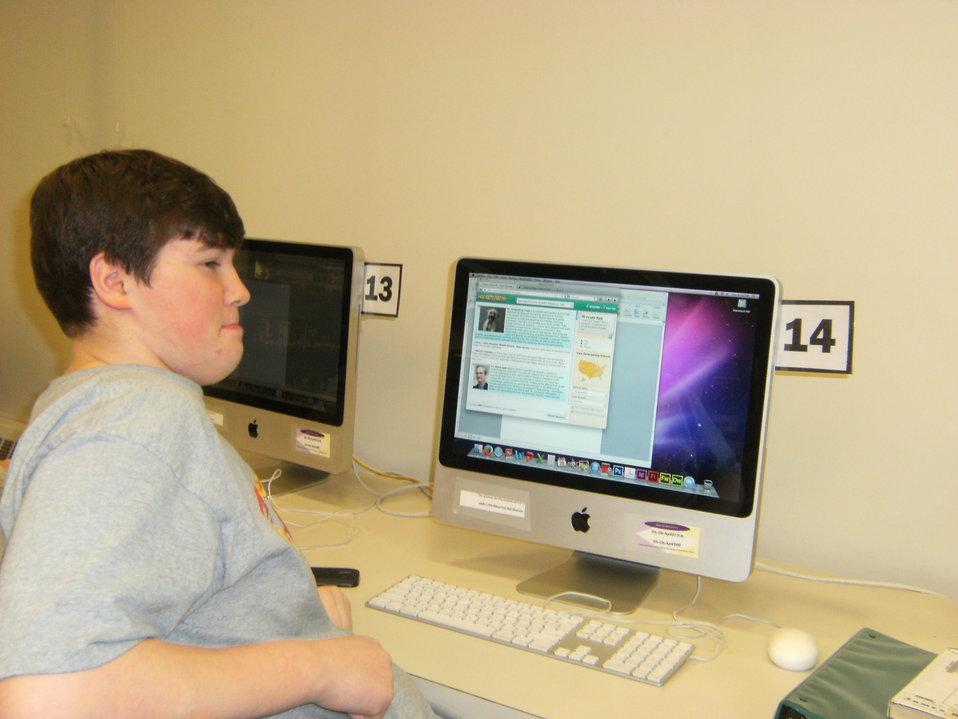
Lathrop High School SADD

Students Against Destructive Decisions (SADD)
presented an assembly with guest speaker Amy Bollaert, Coordinator of the Fairbanks Prevention Coalition, as part of SADD's 'Signature Events' program in Fairbanks, Alaska